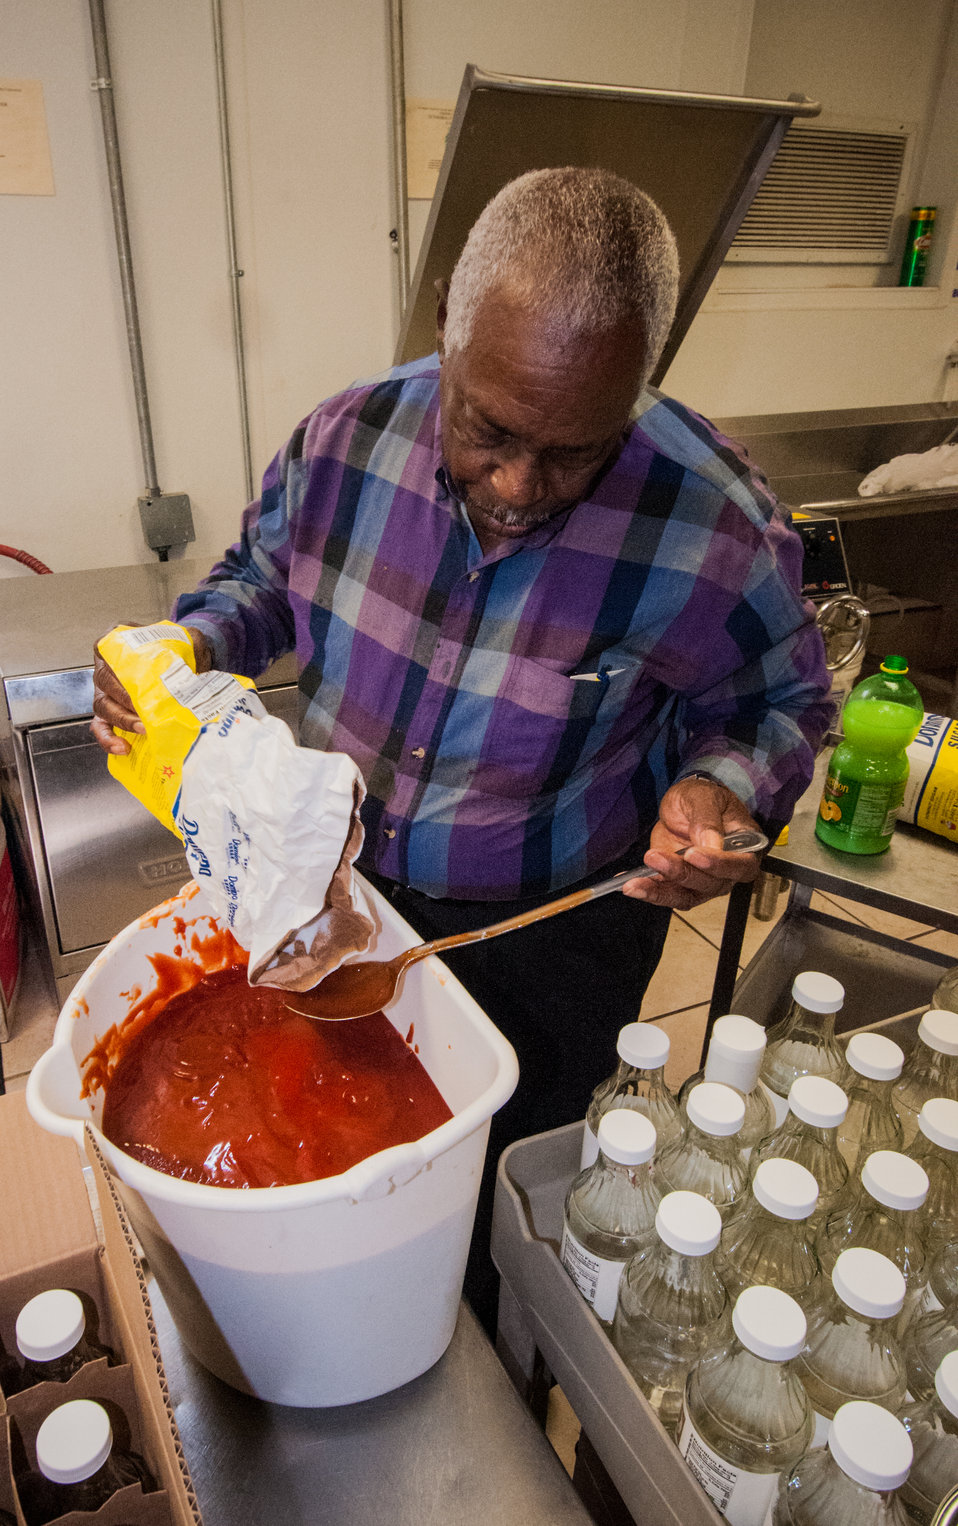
Clarence Cowart prepares his recipe for CC’s Home-style BBQ Sauce in the incubator kitchen at the East Baker Historical Society Community Center in Newton, Baker County, GA on Mar. 7, 2013. The East Baker Historical Society Community Center secured a U.S. Department of Agriculture (USDA) Rural Development (RD) Community Facilities (CF) Loan for the kitchen that enabled residents to prepare catered meals and to prepare and package food products. The USDA Strike Force Initiative has designated Baker County, GA as a Strike Force county selected to receive assistance to relieve persistent poverty in historically high-poverty counties.